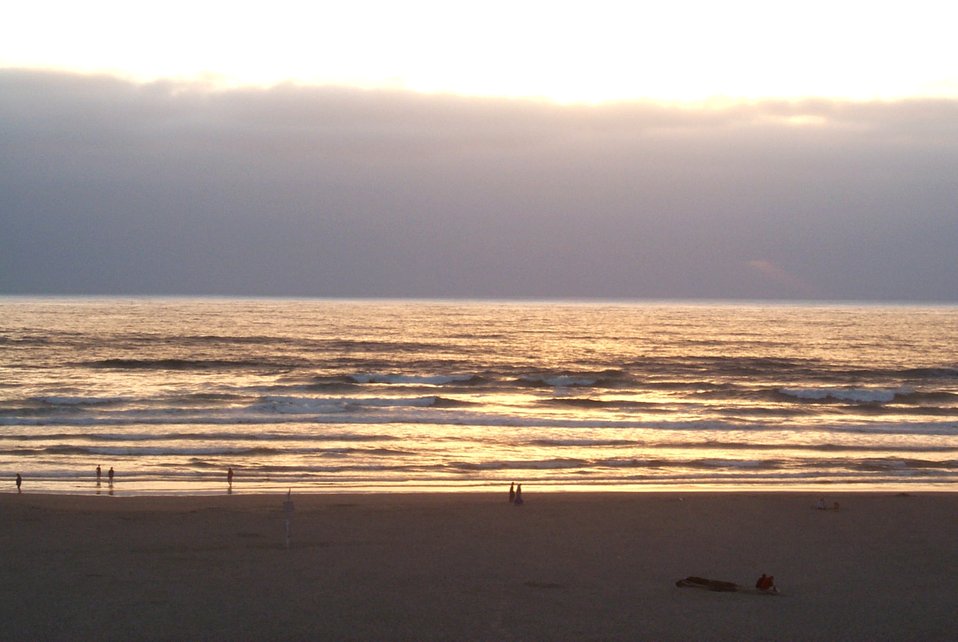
Sun setting behind an offshore fog bank at Seaside.